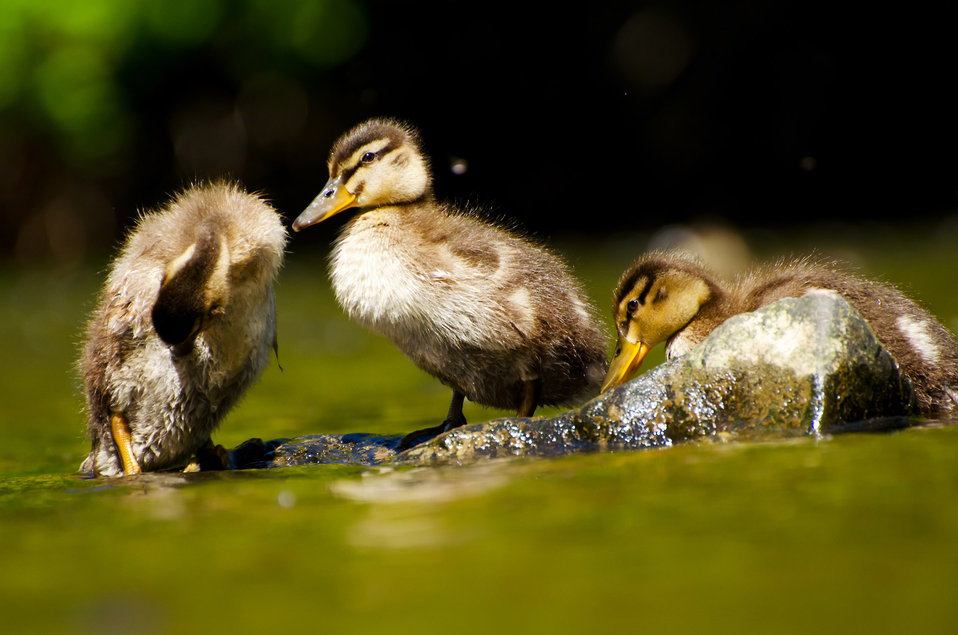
Duckling swimming in water.